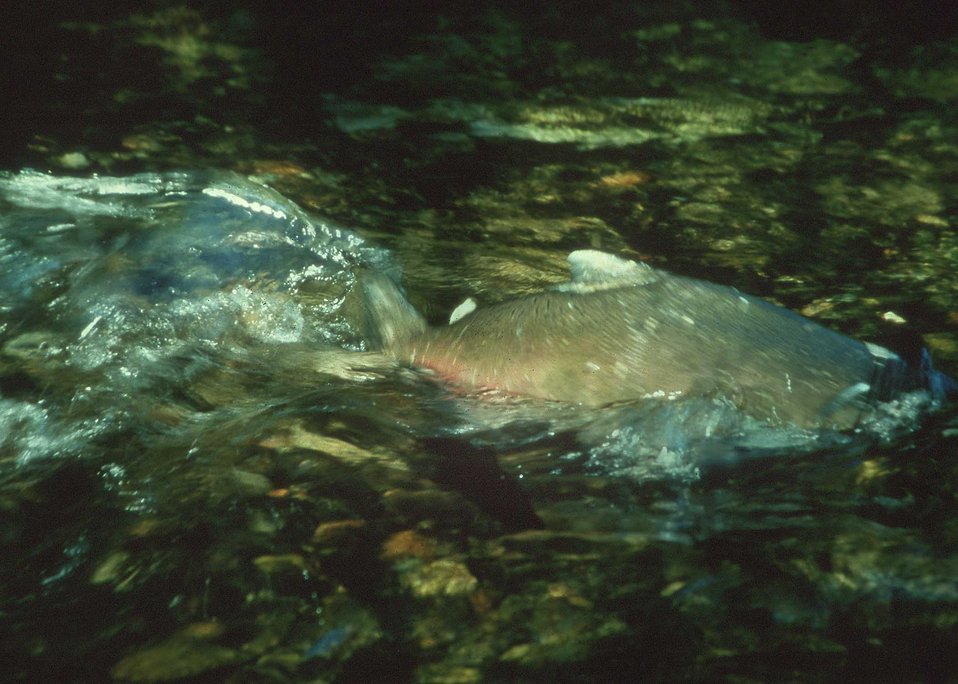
A salmon moves up stream to spawn.